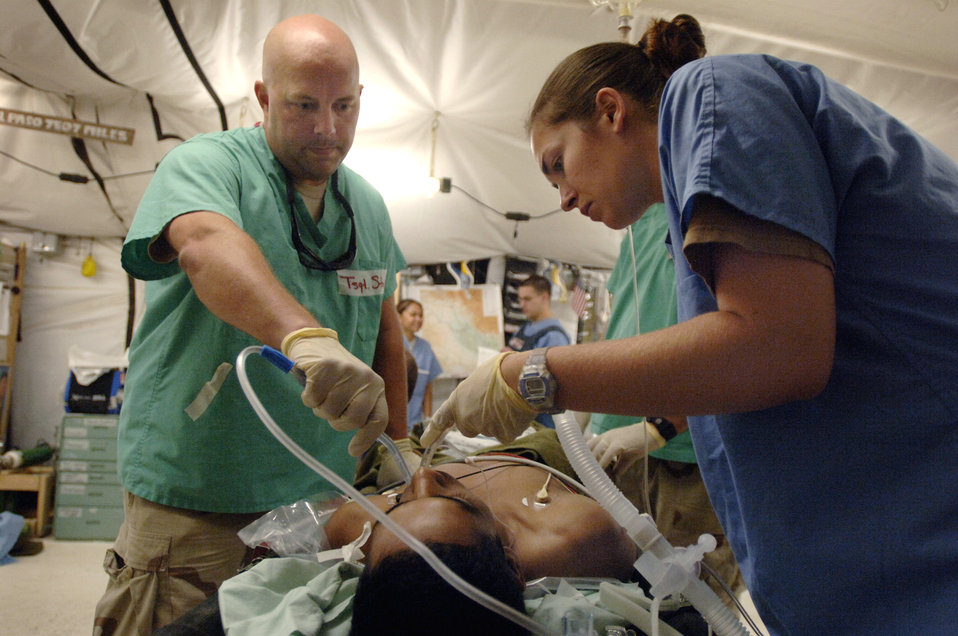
Tough duty brings out best in Balad hospital volunteers

During his day off from work, Tech. Sgt. Ronald Stokes assists medical technician Senior Airman Brynn Delano in the care of a patient as a volunteer in the Air Force Theatre Hospital at Balad Air Base, Iraq. Sergeant Stokes is an F-16 Fighting Falcon crew chief deployed from the 138th Fighter Wing in Tulsa, Okla.